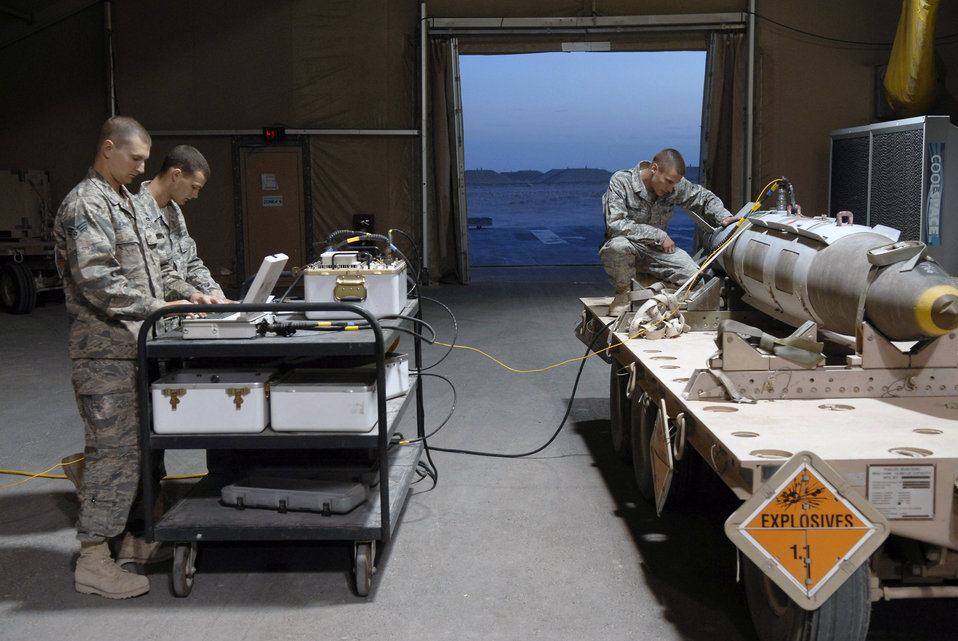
Heavy metal

Senior Airman Richard Parvin (left to right), Airman 1st Class Brian Foster and Airman Bryan Newcomer perform routine checks on the convention ammunitions bit reprogramming equipment for the tail kit of a guided bomb unit-31 Feb. 3 at an air base in Southwest Asia. Airmen Parvin and Foster are 379th Expeditionary Maintenance Squadron ammunitions systems journeymen. Airman Parvin hails from Birminghman, Ala. Airman Foster is from Ellijay, Ga., Airman Newcomer is a 379th EMXS ammunitions systems apprentice and hails from Suwanee, Ga.